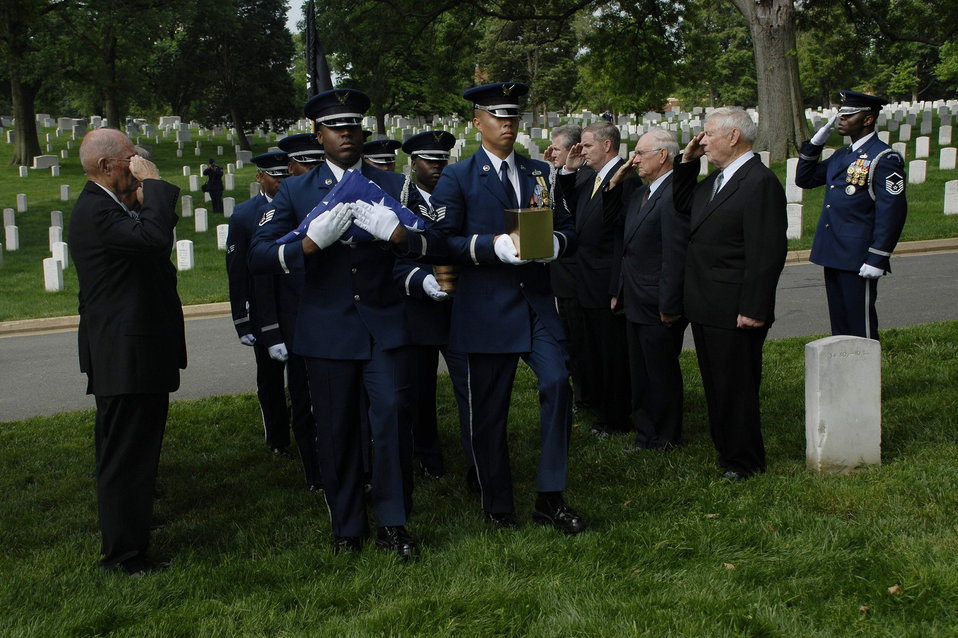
Chief Airey laid to rest at Arlington Cemetery

U.S. Air Force Honor Guard members position the remains of Chief Master Sergeant Paul W. Airey while former Chief Master Sergeant's of the Air Force render salutes during the memorial service at Arlington National Cemetery, Va., May 28. Chief Airey, serving 27 years, became the first Chief Master Sergeant of the Air Force April 3, 1967, following his installment by then Secretary of the Air Force Harold Brown and Air Force Chief of Staff Gen. John P. McConnell. Chief Airey retired from active duty on Aug. 1, 1970 and died March 11 in Panama City, Fla. Chief Airey and his wife Shirley's remains were buried together at Arlington National Cemetery.